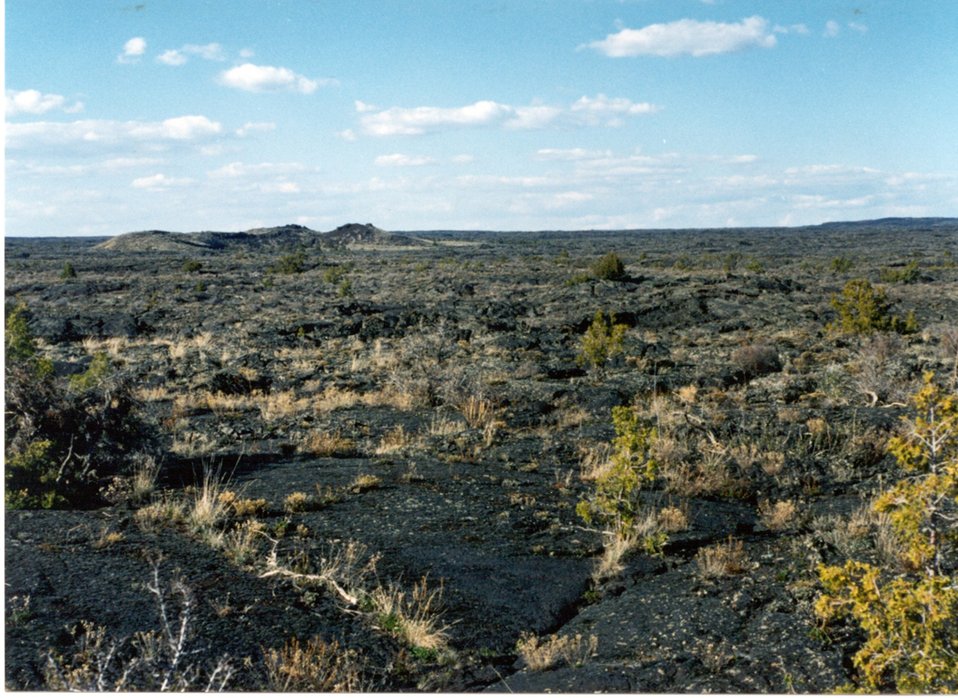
Craters of the Moon Shoshone Field Office USRD Upper Snake River District